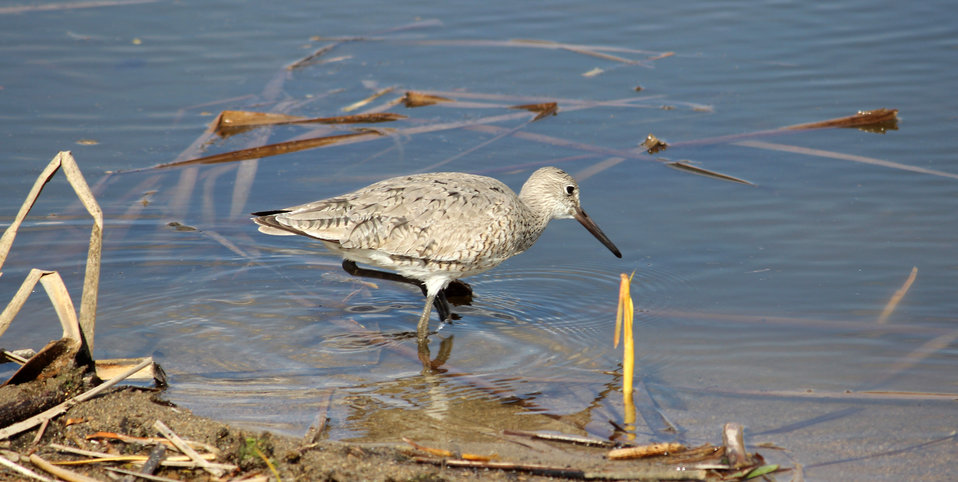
Willet

This willet forages along a wetland edge on the Schneider Waterfowl Production Area in Dickey County, North Dakota.